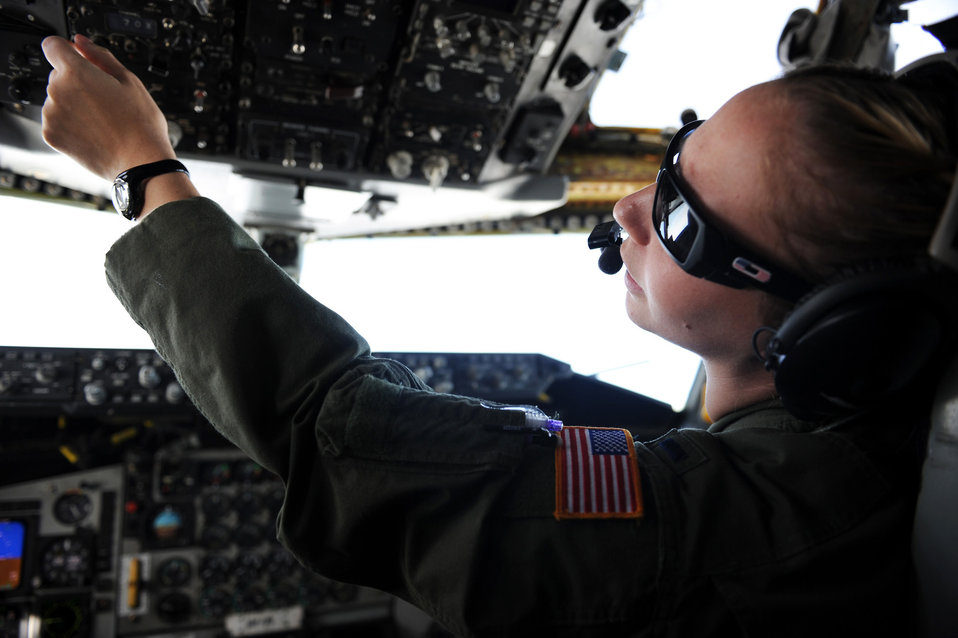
Air Refueling

1st Lt. Emily Kubusek flys the historic